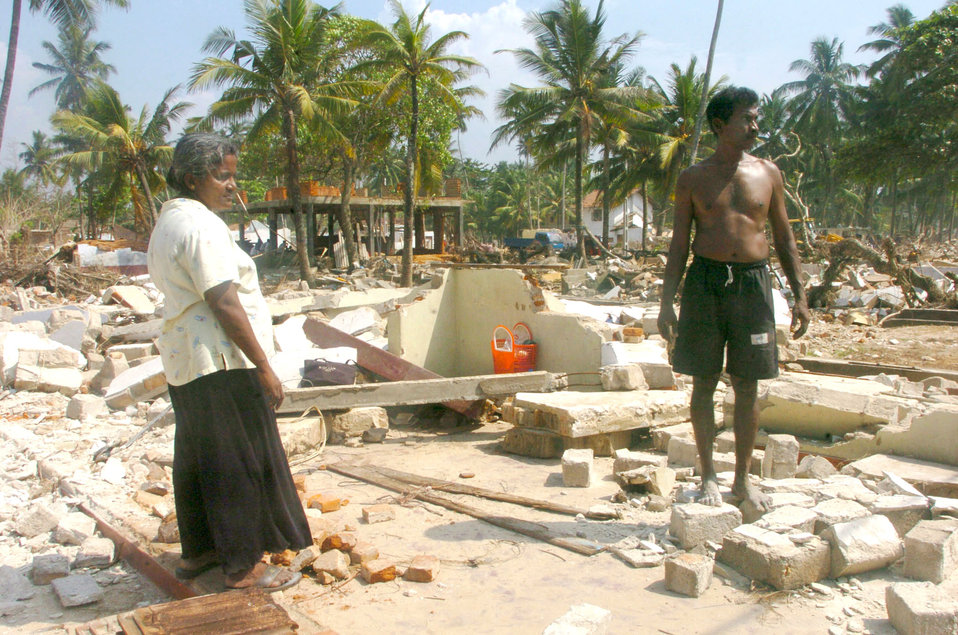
The human element of a humanitarian mission

GALLE, Sri Lanka -- K. Rupawathi and her husband A.P. Tudor Jayasekera ponder their future at the ruins here where their home once stood. The couple lost their home and all their belongings after tsunamis as high as 50 feet devastated their town and swept across coastal areas. U.S. servicemembers are in the country helping deliver food supplies at various locations.